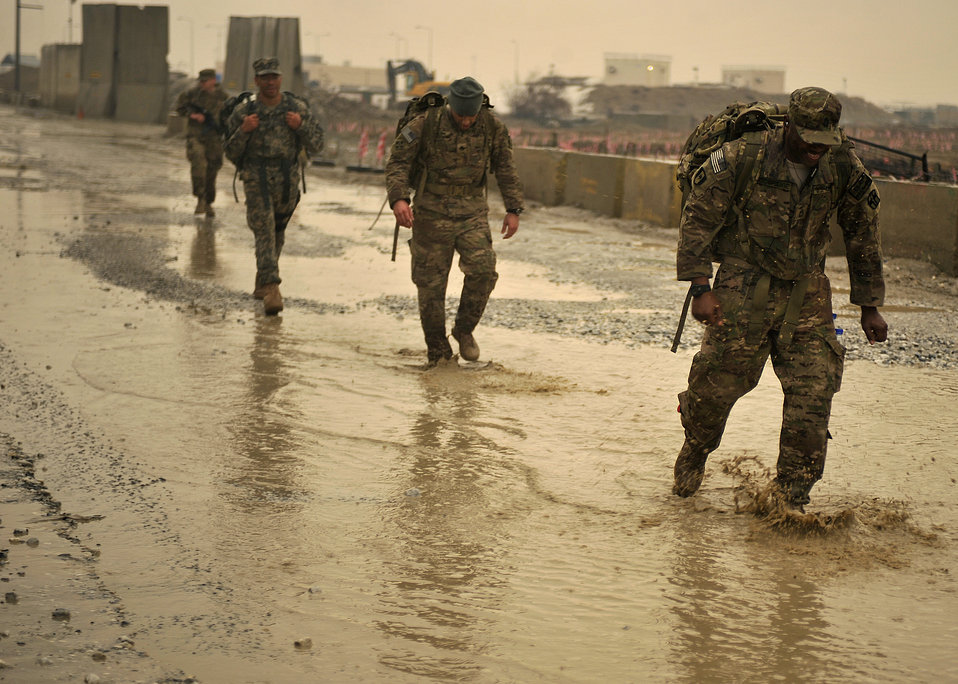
Bagram Airfield service members honor AF hero

Participants in the Senior Airman Jason Cunningham Remembrance Ruck March trudge along the perimeter of Bagram Airfield, Afghanistan, March 4, 2012. Cunningham was a pararescueman who died in combat March 4, 2002, while saving 10 men’s lives. The Air Force’s Camp Cunningham at Bagram Airfield is named after him. The ruck march was one part of a three-part ceremony held in remembrance of the 10 year anniversary of his heroic sacrifice.